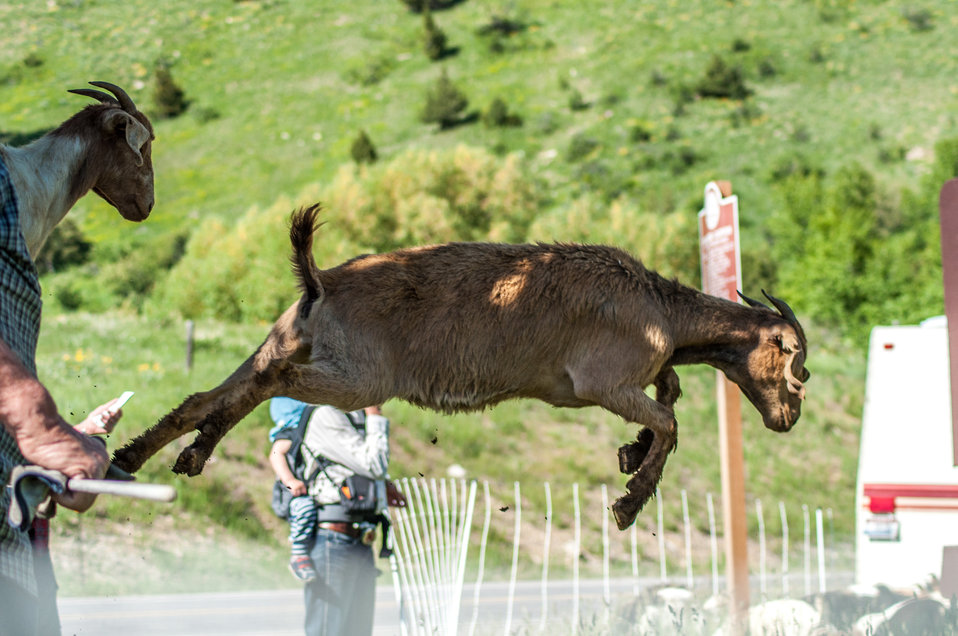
Goat landing on Bozeman Fish Technology Center

On June 8 at 5:00 p.m., 409 yearling domestic goats were off-loaded on the Bozeman Fish Technology Center (BFTC) campus. Thus begins a 3-4 year project of monitored targeted grazing and applications of friendly insects to control noxious weeds and manage brush overgrowth on property of the U.S. Fish and Wildlife Service BFTC.

Purposes of this effort are to reduce the presence of undesirable vegetation, promote restoration of native plants, and assist with fire protection by reducing burnable plant biomass.

The cooperative venture involves the U.S. Fish and Wildlife Service, Montana Outdoor Science School, Friends of the Bozeman Fish Technology Center, Gallatin Valley Land Trust, U.S. Forest Service, and Prescriptive Livestock Services. Integrated Weed Control is supplying the insects as an in-kind contribution to the project, and has applied insects on the BFTC’s 'hot spots' in previous years.